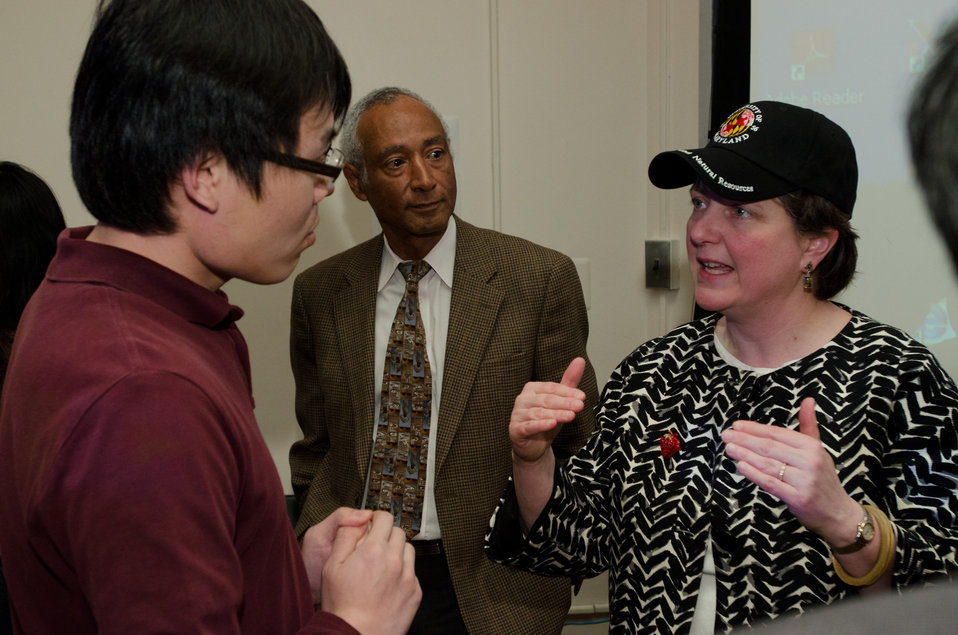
U.S. Department of Agriculture (USDA) Deputy Secretary Kathleen Merrigan responded to a question from Wenting Ju about food safety, following the presentation of the “Know your Farmer Know your Food” initiative to students and faculty at the Animal Sciences / Agricultural Engineering Building at the University of Maryland, in College Park, MD, on Thursday, April 7, 2011. Deputy Secretary Merrigan’s interactive presentation utilized wireless polling in the lecture room to present questions to the audience who used handheld devices to choose from a list of multiple answers. Their answers were instantly tabulated, then Merrigan revealed their top choice on the screen, followed by the correct answer, usually revealing an error and misconceptions. Her talk covered support of local farmers; strengthening rural communities, promoting healthy eating, protecting natural resources; grants, loans and other support USDA provides as well as stories of innovation; industry and government cooperation; and careers opportunities in agriculture, ranching and the USDA.